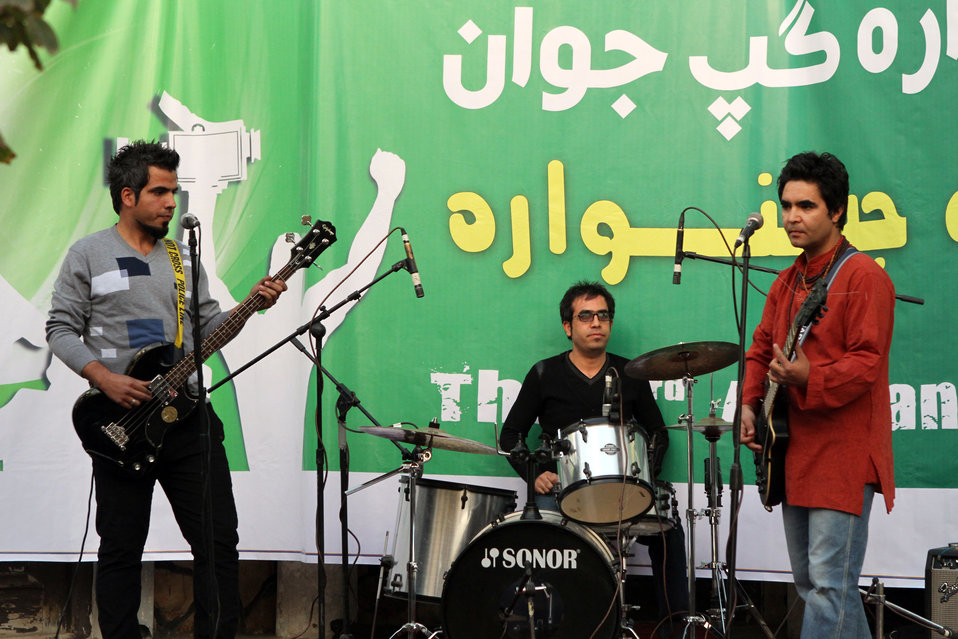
Afghan Youth Festival

Internews - USAID